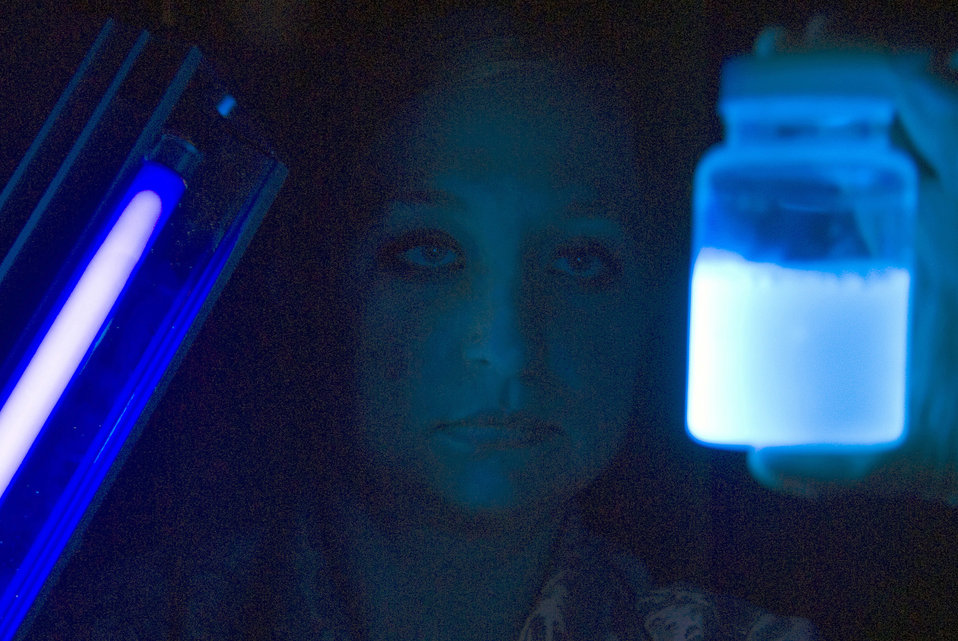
Water safety

Staff Sgt. Eva Doty, 8th Medical Operations Squadron special surveillance NCO, uses a black light to check for bacteria in a water sample at Kunsan Air Base, South Korea. Samples are tested weekly to ensure harmful bacteria aren't present in the base's drinking water system.